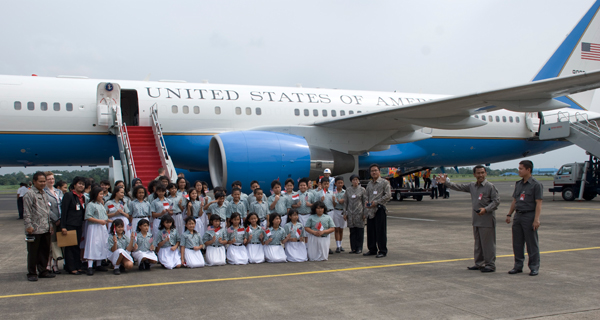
Secretary Clinton Greeted at Jarkarta Airport

Menteng Elementary School 1 Children's Choir welcomes Secretary Clinton to Jakarta, Indonesia, Feb. 18, 2009.